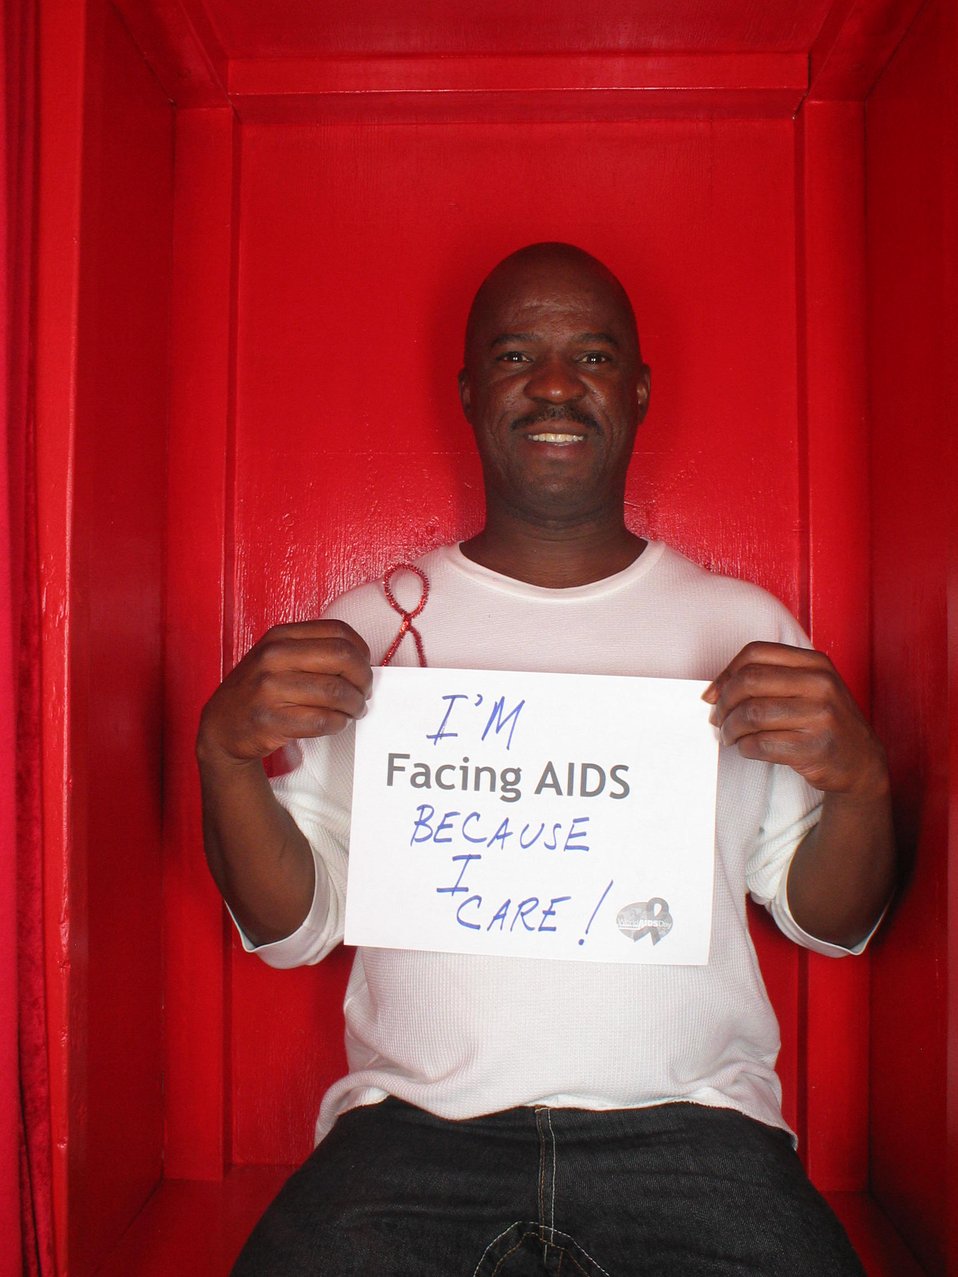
I'm Facing AIDS because I care!